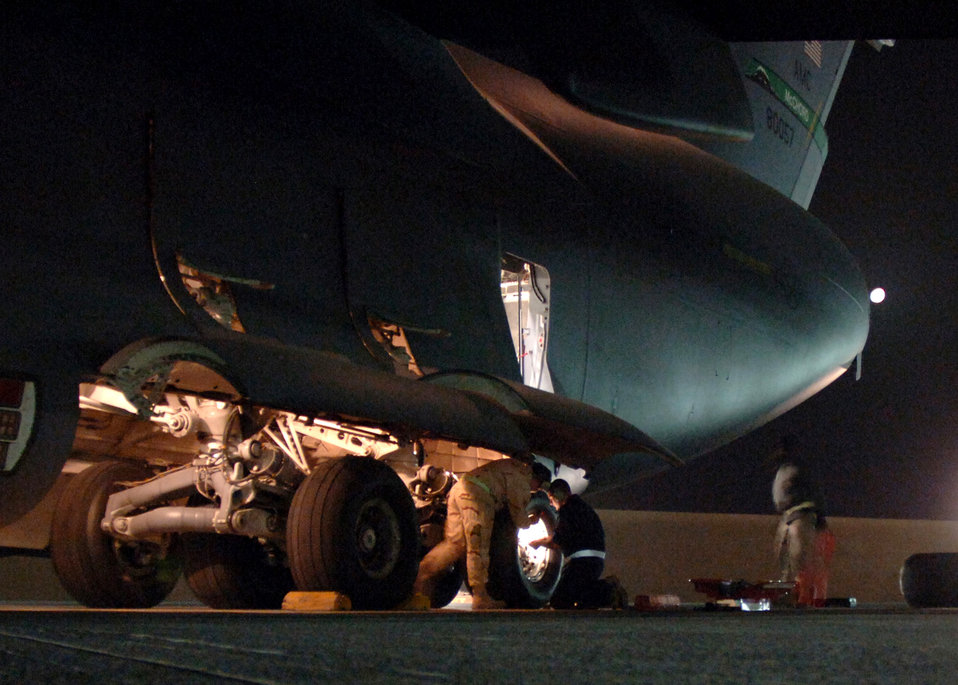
Tire change

Crewmembers from the 817th Expeditionary Airlift Squadron change a tire on a C-17 Globemaster III at a deployed location in Southwest Asia on Sunday, Mar. 12, 2006. The aircraft is from McChord Air Force Base, Wash.